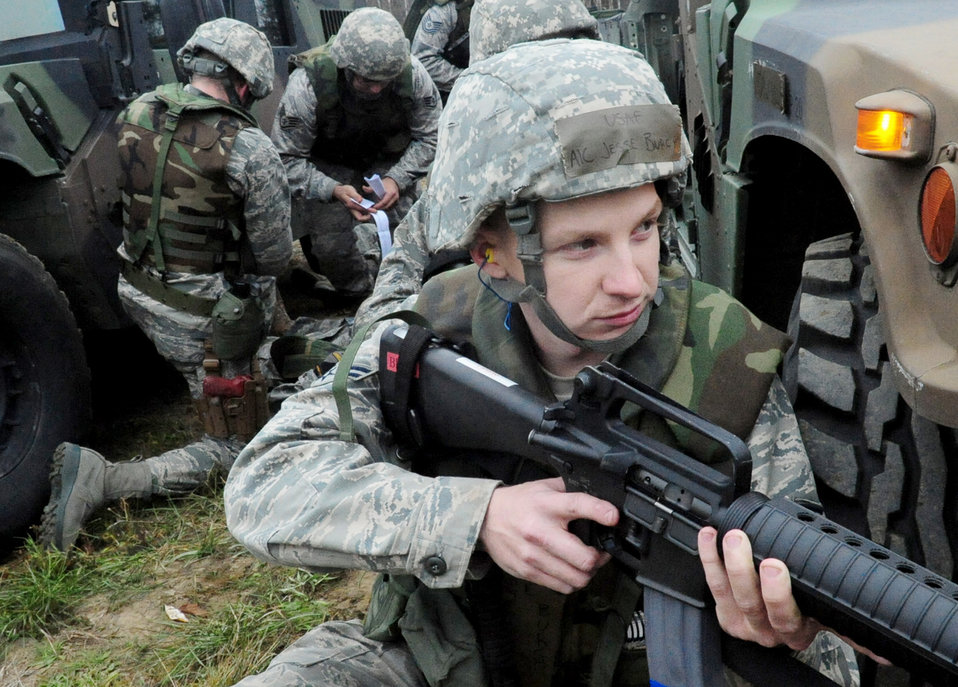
Combat skills training

Airman 1st Class Jesse Burton provides security while fellow Airmen set up a